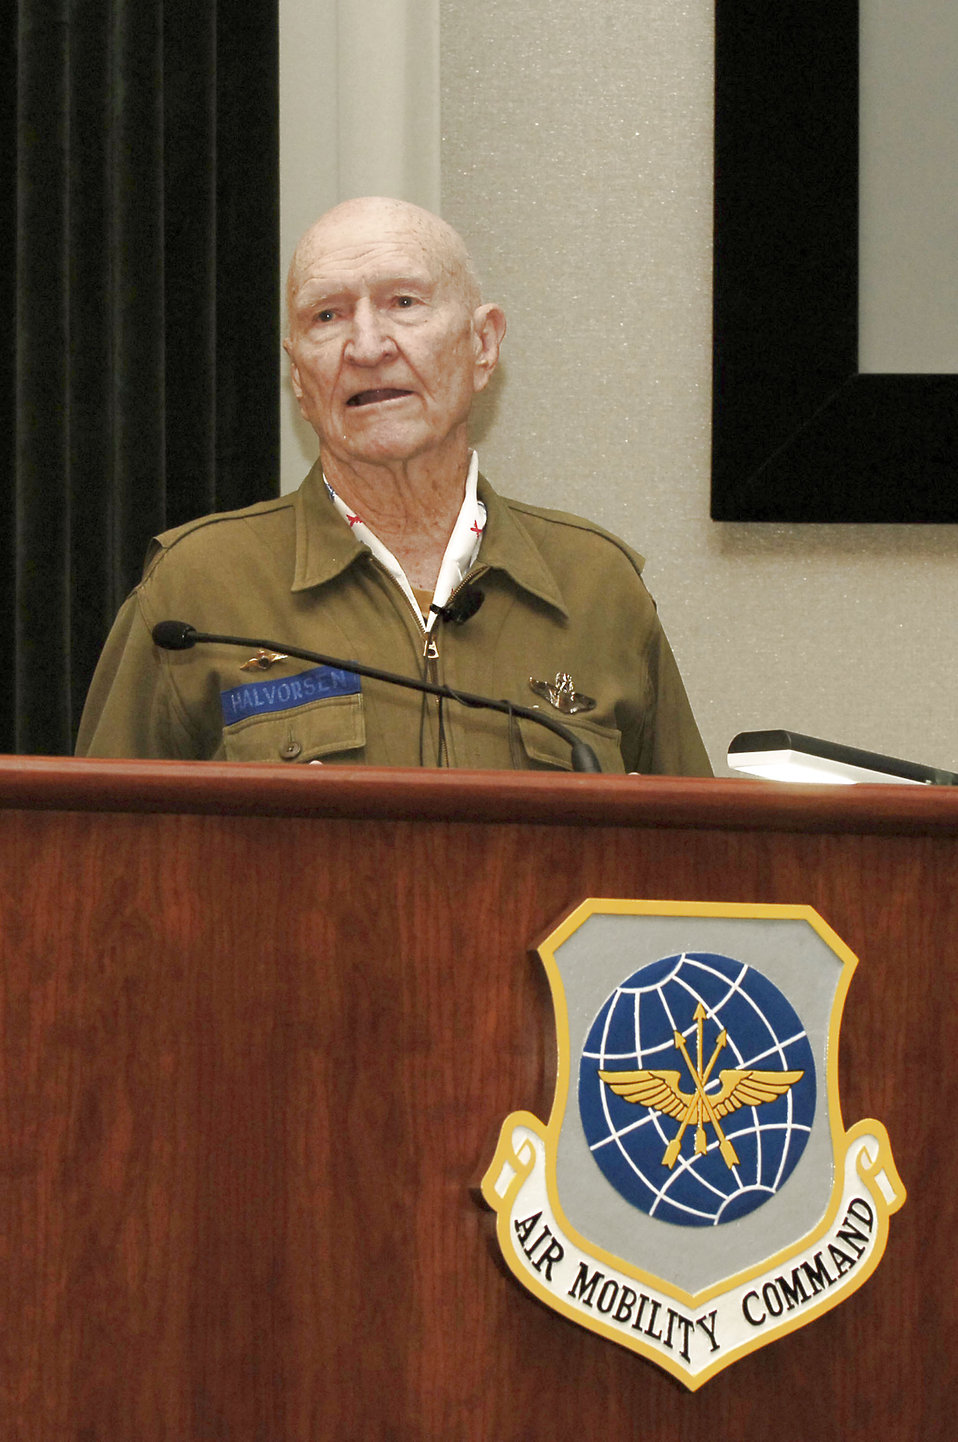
Phoenix Rally celebrates 60th Anniversary of Berlin Airlift

Retired Col. Gail Halvorsen speaks to Air Force leaders on the Berlin Airlift during the 2008 Phoenix Rally conference March 21 at MacDill Air Force Base, Fla. Also known as the Berlin Candy Bomber, Colonel Halvorsen spoke of his experiences to commemorate the 60th anniversary of the Berlin Airlift.The purpose of the conference was to shape the Air Mobility Command as well as display the legacy of global reach and hope.